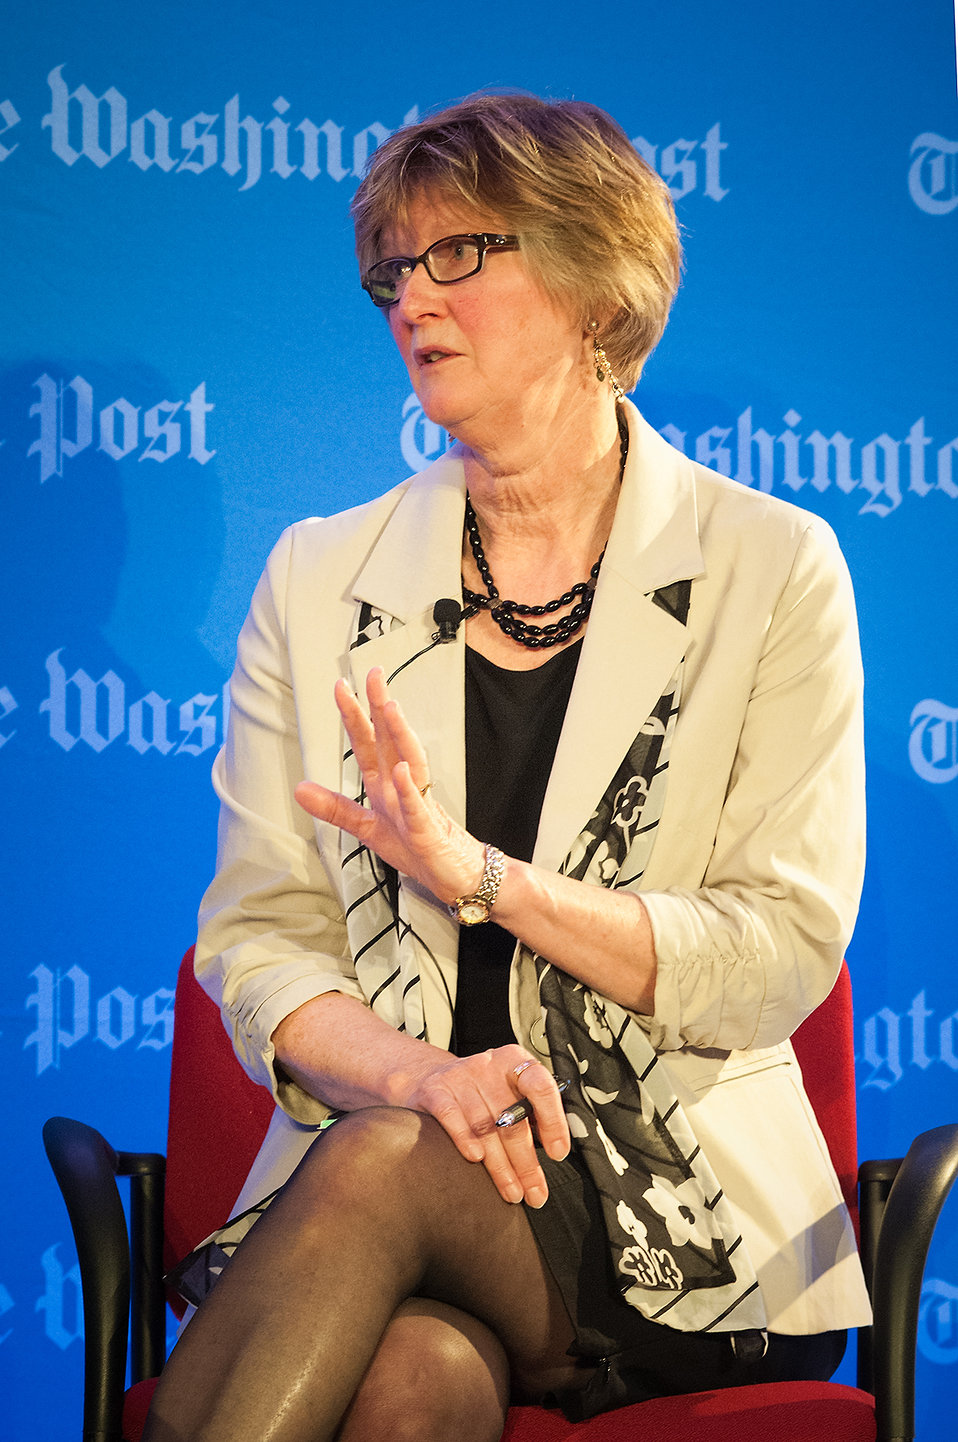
National Corn Growers Association President Pam Johnson discusses From the Farm: Innovations and the Latest Advances in Food Production during the annual live forum, “Future of Food: Building a Sustainable Food System 2013,” sponsored by the Washington Post Live in Washington, D.C. on Wednesday, May 22, 2013. Agriculture Secretary Tom Vilsack, leading agricultural, government and nutrition experts discussed expanding healthy, sustainable food systems including public-private partnerships, the market’s role in nutrition and the future of agricultural innovation.